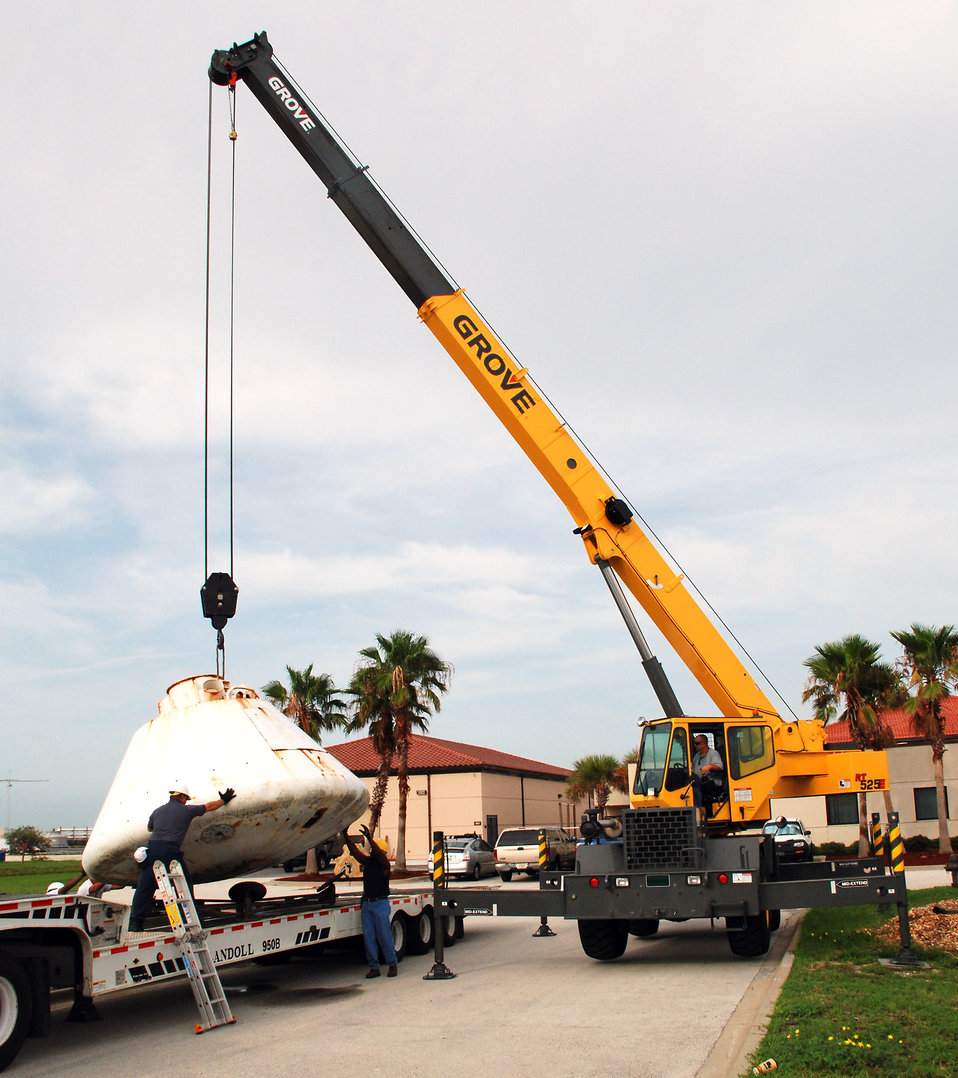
Historic capsule makes trip to body shop

Workers help guide the 9,000-pound Apollo Boilerplate #1206 capsule onto a flatbed truck for transportation to a local refurbishment facility July 1 at Patrick Air Force Base, Fla. On loan here to the Air Force Reserve's 920th Rescue Wing from the Smithsonian Institute's Air and Space Museum, the capsule was once used by Air Force rescue units to train for astronaut recovery during the Apollo and Skylab space programs.